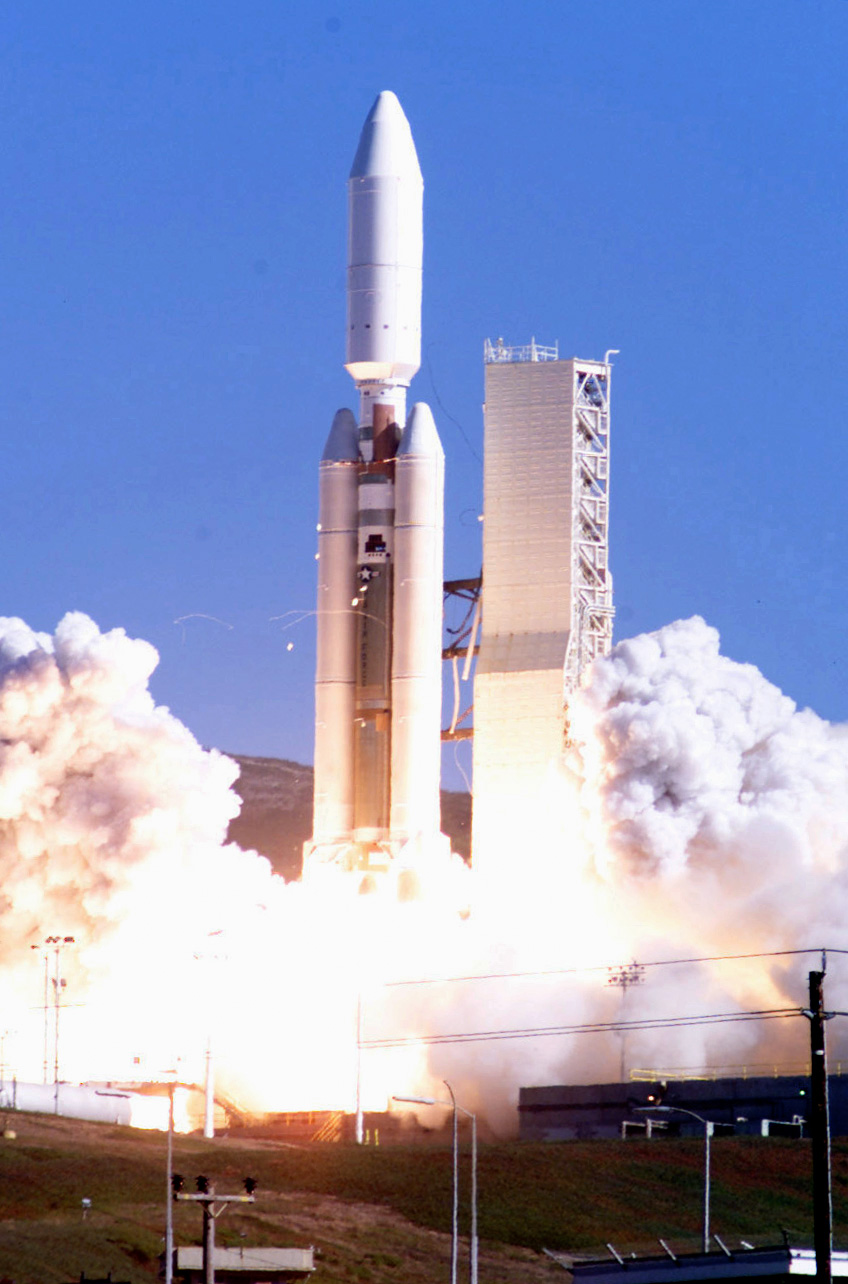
Titan IV-B

VANDENBERG AIR FORCE BASE, Calif. -- A Titan IV-B rocket lifts off August 17, 2000. The rocket carried a National Reconnaissance Office satellite into orbit.